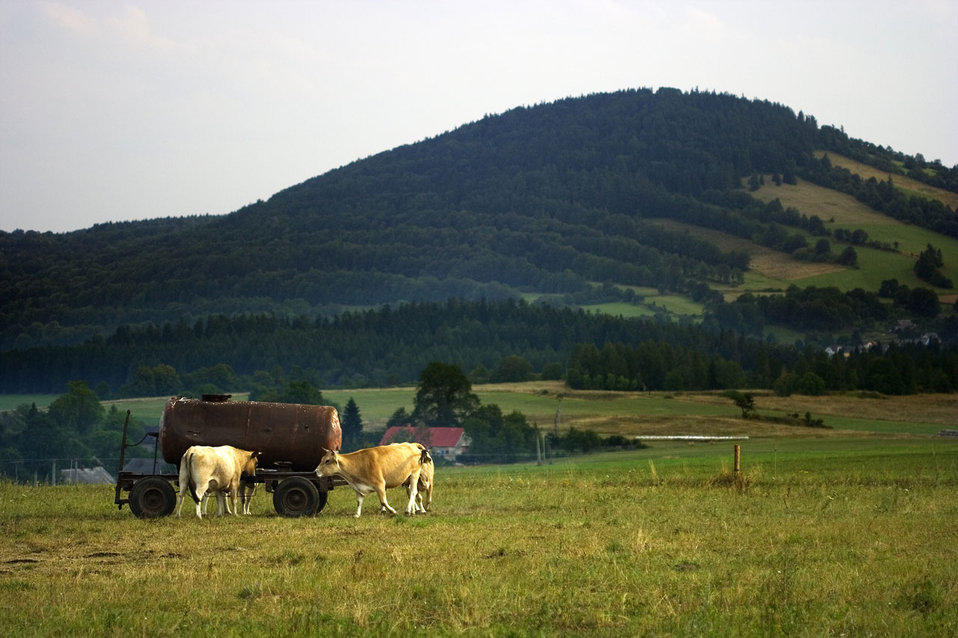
Drinking cows on pasture with a hill in the background.